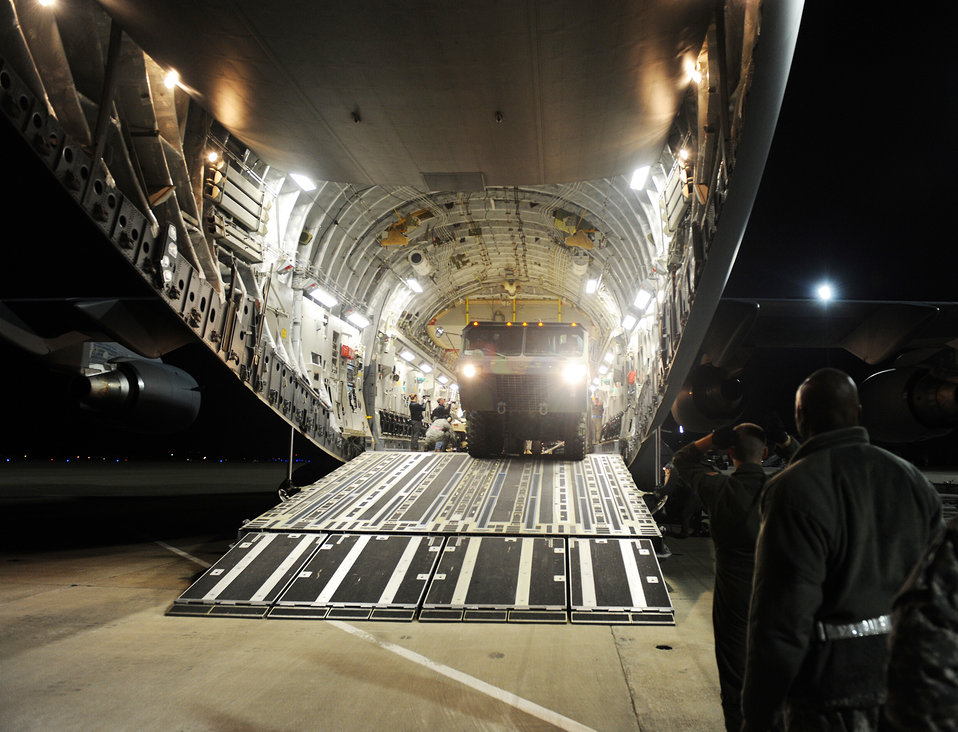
United Response

An M1120 Heavy Expanded Mobility Tactical Truck Load Handling System backs into a C-17 Globemaster III from the 512th Airlift Wing, Dover Air Force Base, Del. Jan. 19, 2010, at Langley Air Force Base, Va. Personnel from Langley AFB and Fort Eustis, Va., worked together to load the C-17 as part Operation Unified Response.